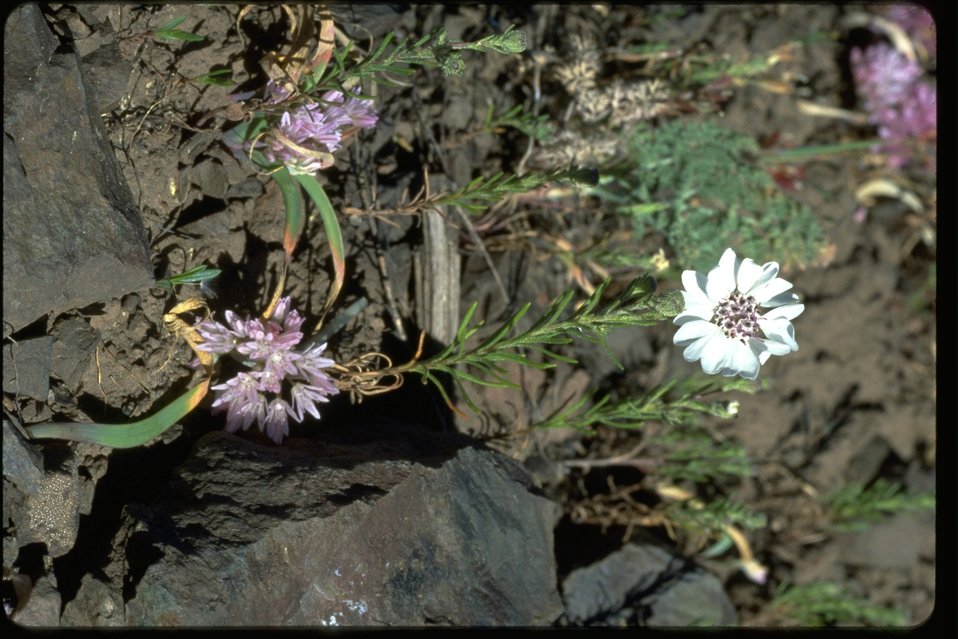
Medium shot of wild onion.